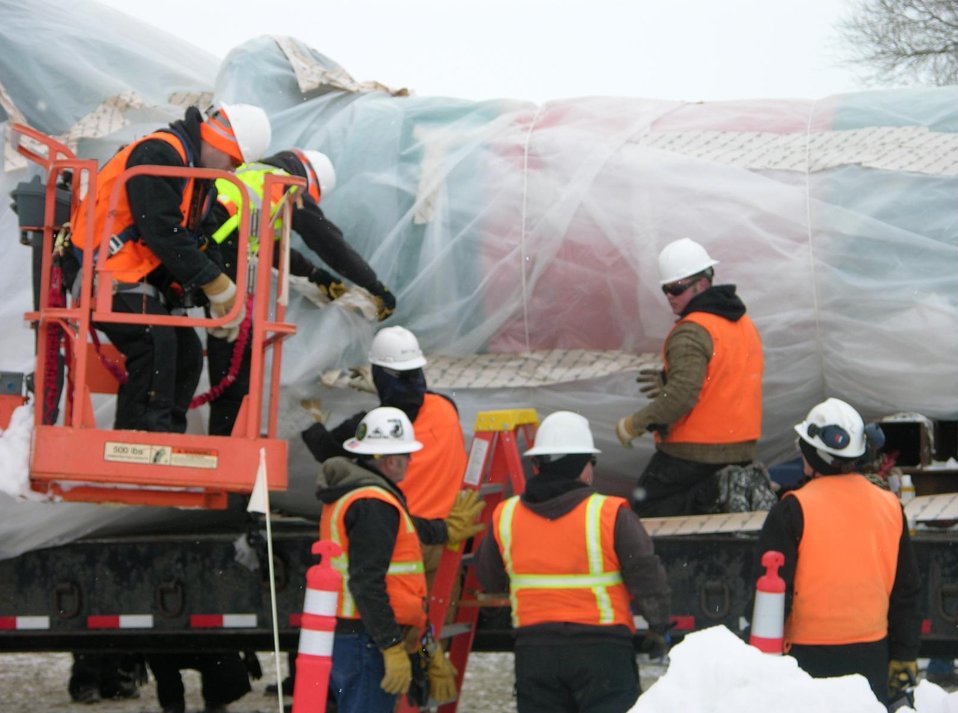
Recovery Act Crews Bury Last of Historic Reactors at Idaho Site